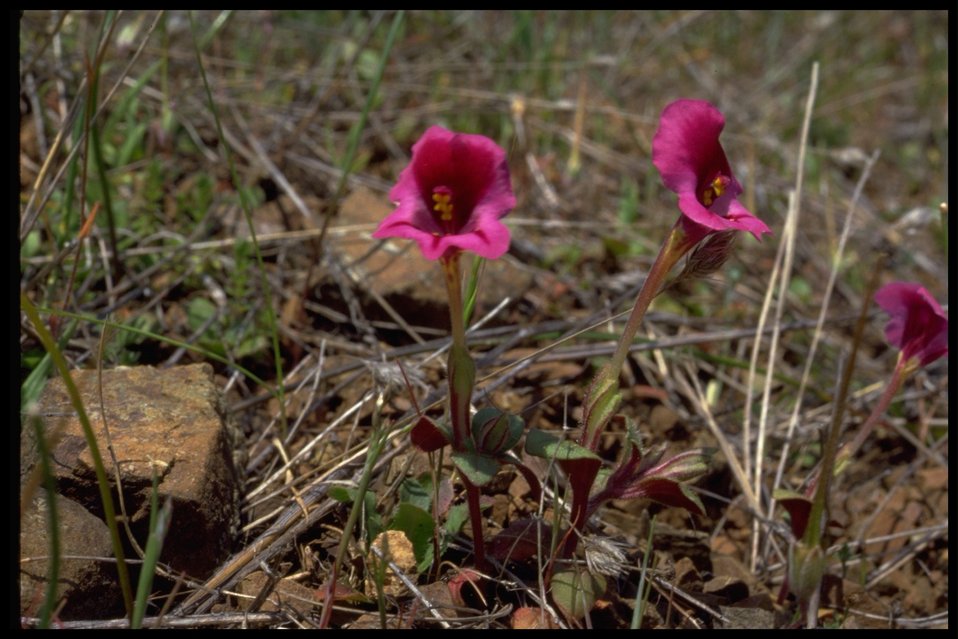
Mimulus kelloggii, or commonly known as Kellogg's Monkey Flower